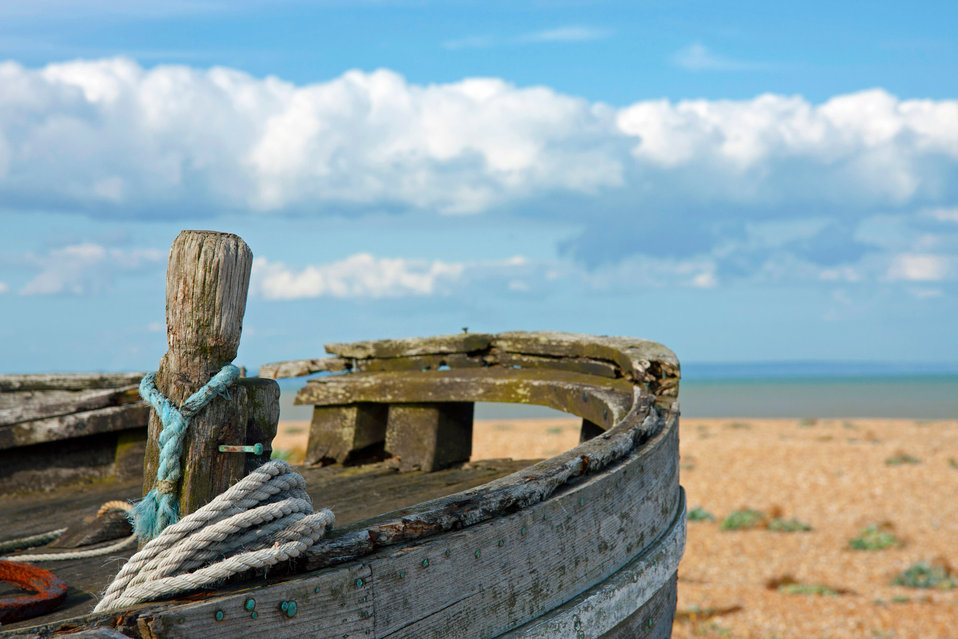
Wooden boat details

Close-up details of a wooden fishing boat.